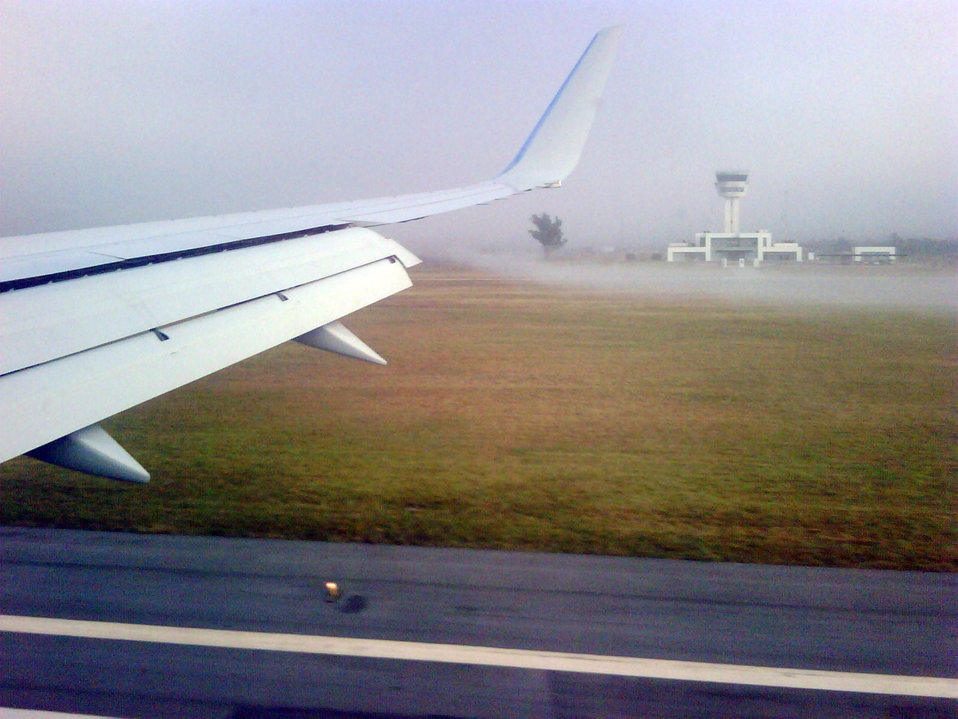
Behind the Scenes: Wheels Down in Montevideo, Uruguay

Scenes taken from U.S. Secretary of State Hillary Rodham Clinton's traveling team as they arrive in Montevideo, Uruguay March 1, 2010.